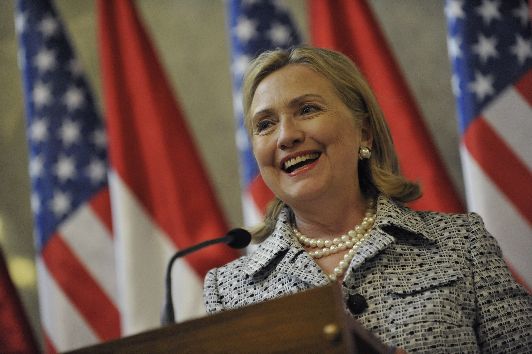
Secretary Clinton Speaks at a Press Conference in Budapest

U.S. Secretary of State Hillary Rodham Clinton speaks during a press conference in Budapest, Hungary, June 30, 2011.